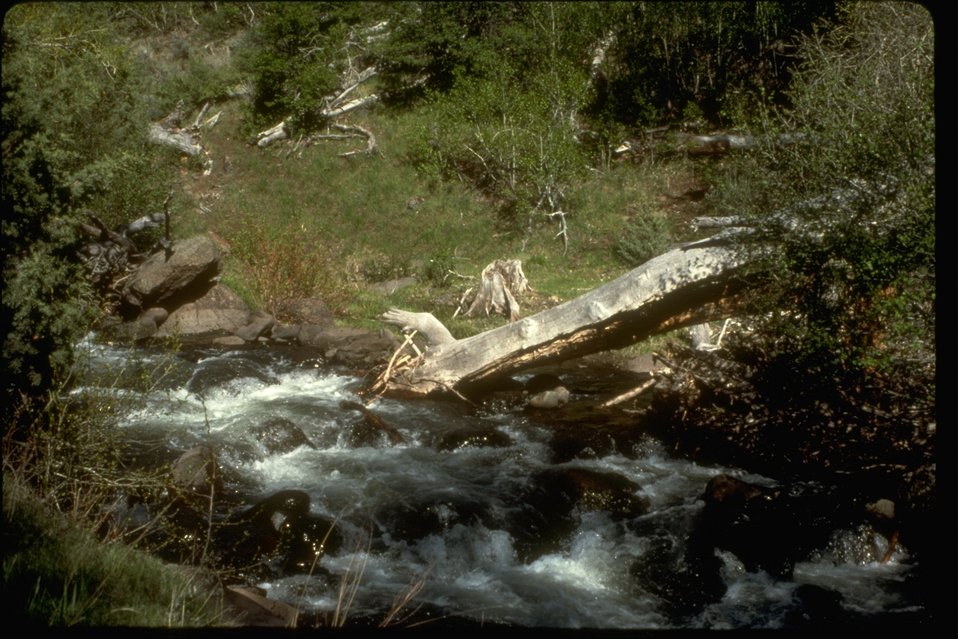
Little Blitzen Gorge and river near hiking access. OR 2-86F